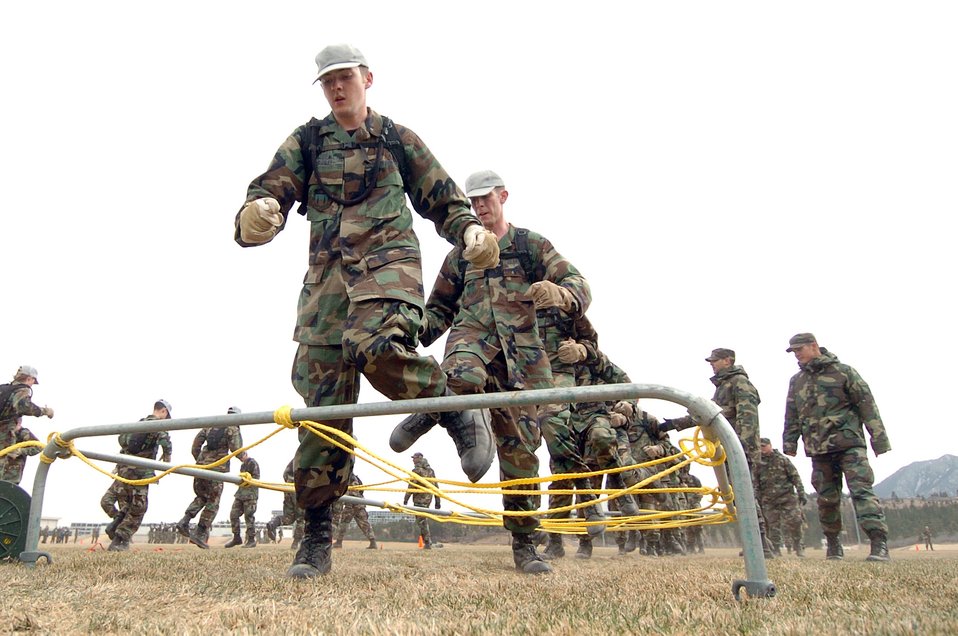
Class of 2009 formally recognized

Cadet 4th Class Matthew Danley demonstrates some fancy footwork on the assault course during a training event at recognition Saturday, March 18, 2006, at the U.S. Air Force Academy, Colo.